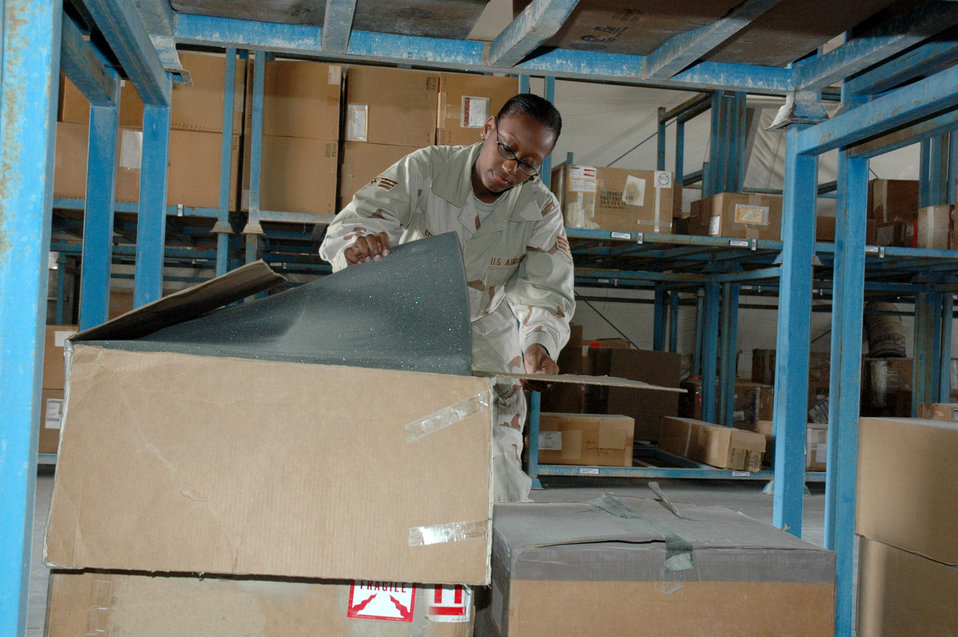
On-site storage supports transition to enduring presence

Senior Airman Taneshia Steward repacks plane parts at the newest 379th Expeditionary Logistics Readiness Squadron storage facility in Southwest Asia. Storing pre-positioned aircraft parts in warehouses on location is part of the transition from expeditionary to an enduring presence. Airman Steward is a storage journeyman with the 379th ELRS.